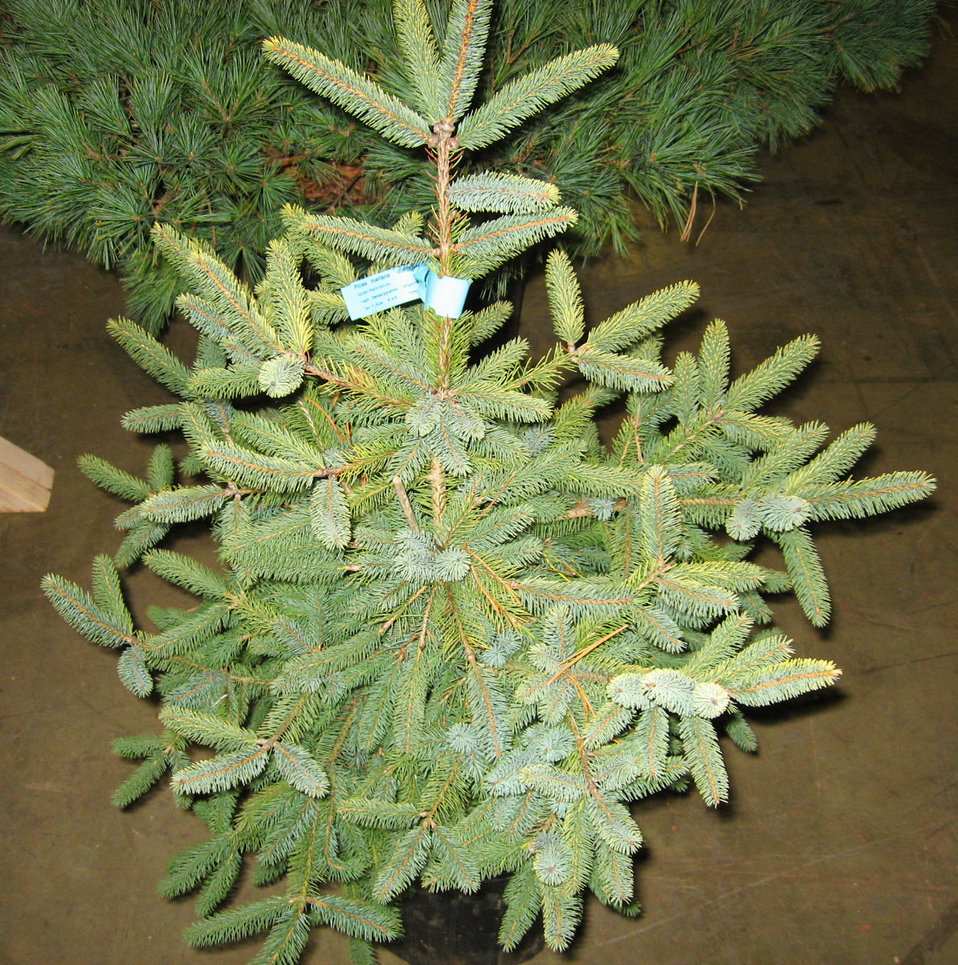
Dwarf black spruce

Picea mariana ‘Golden’ (Dwarf black spruce), a native plant

Learn more about EPA’s Exhibit at the 2010 Philadelphia International Flower Show:
www.epa.gov/reg3esd1/garden/flower show.htm
www.epa.gov/reg3esd1/garden/flower show plants.htm
www.epa.gov/reg3esd1/garden/pdf/flowershow2010.pdf (6 pp, 864K)